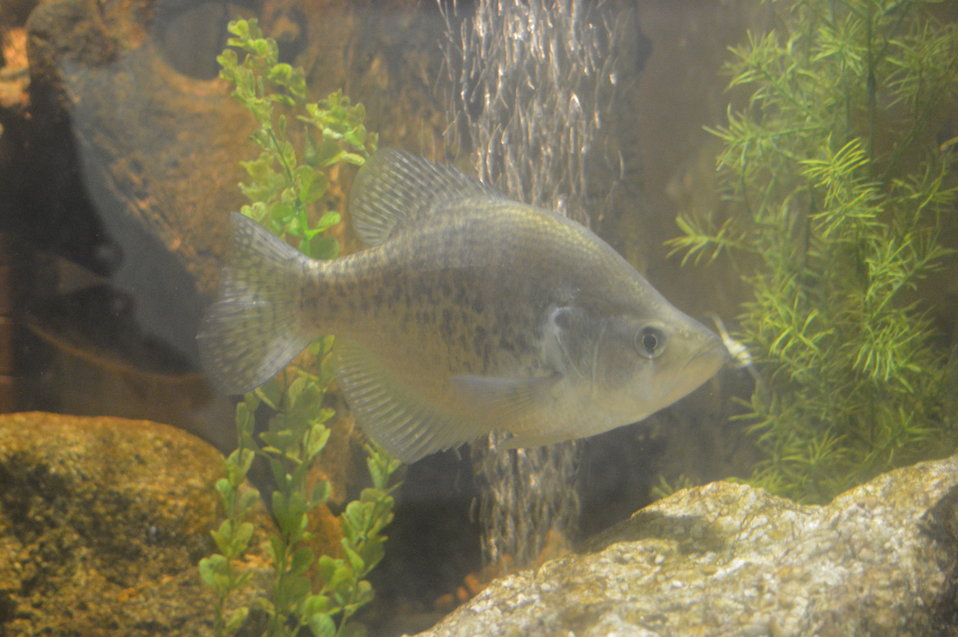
Perch in aquarium at Garrison Dam NFH

Garrison Dam National Fish Hatchery in North Dakota.